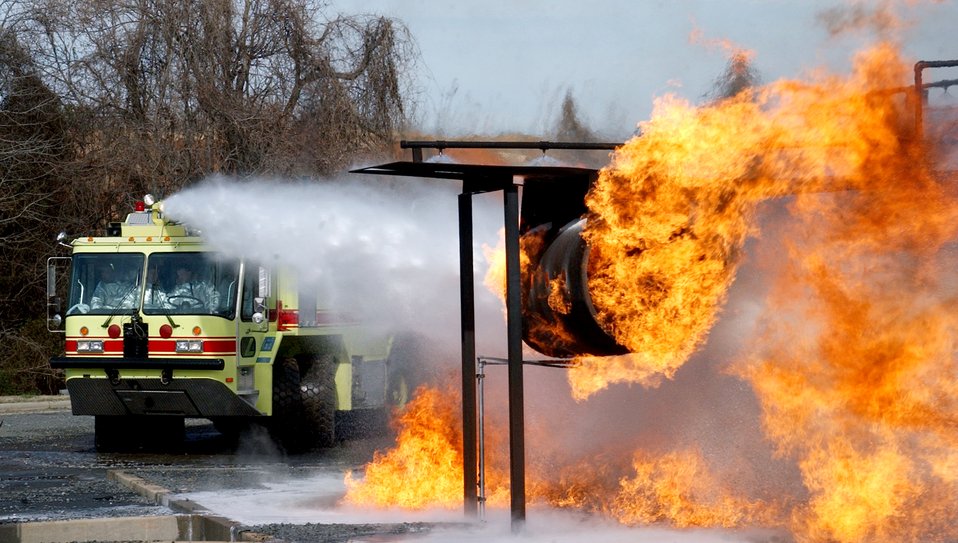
Feeling the heat

CHARLOTTE, N.C. (AFPN) -- Firefighters assigned with the 916th Air Force Reserve Fire Protection Flight fight a fire during an exercise on a mock fuselage. The 916th, assigned to nearby Seymour Johnson Air Force Base, is performing their annual recertification training.